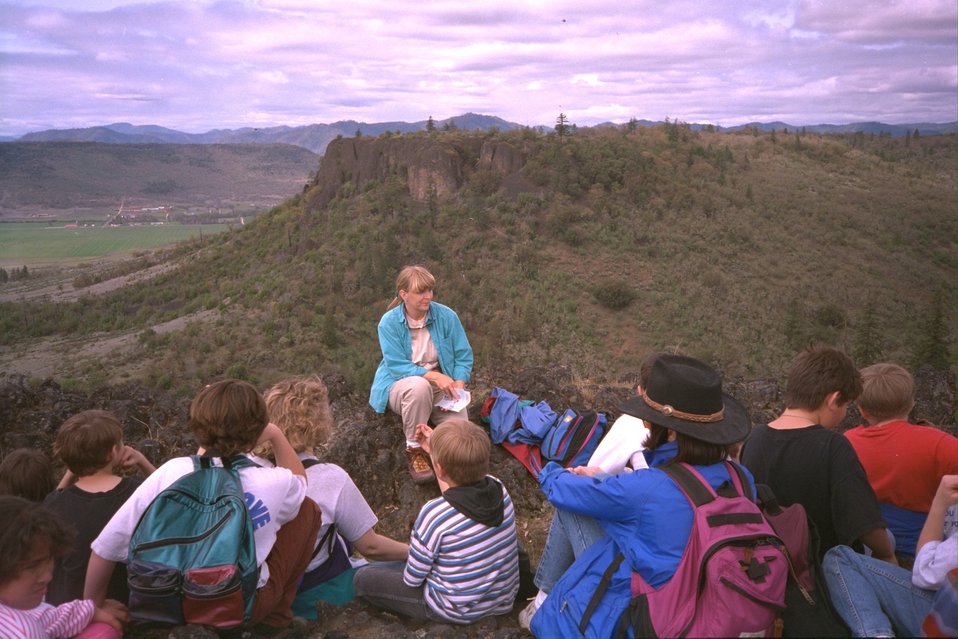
Table Rock hike: Jeanne Klein teaches an elementary school class on the Upper Table Rock.